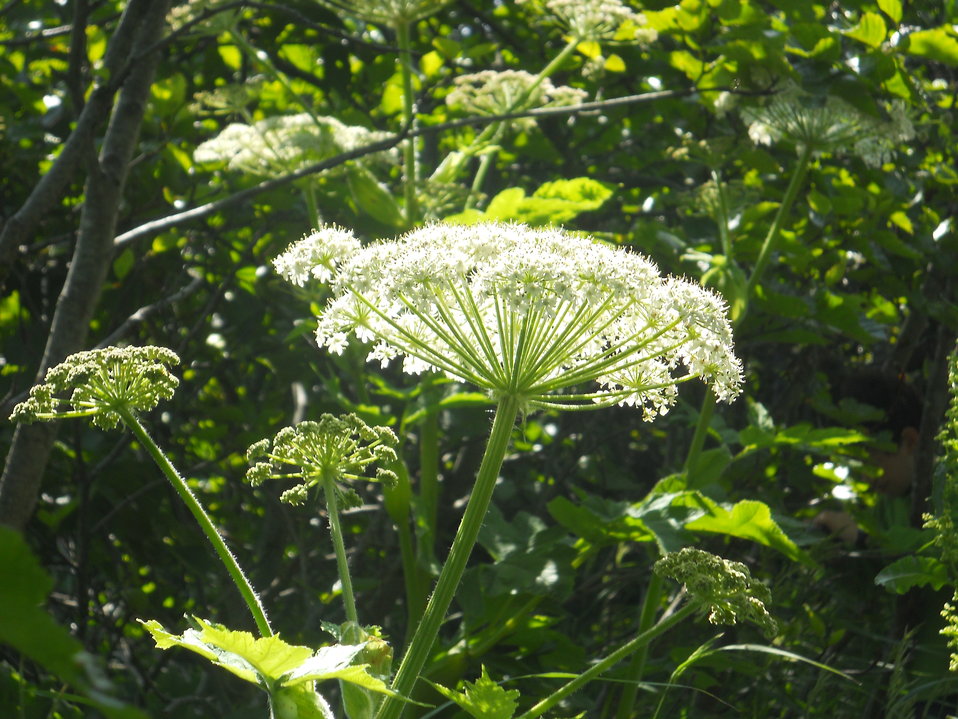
Pushki in Flower

Credit: USFWS
Photo taken by a Salmon Camp participant during a nature photography activity.

Source and Contact: Kodiak National Wildlife Refuge